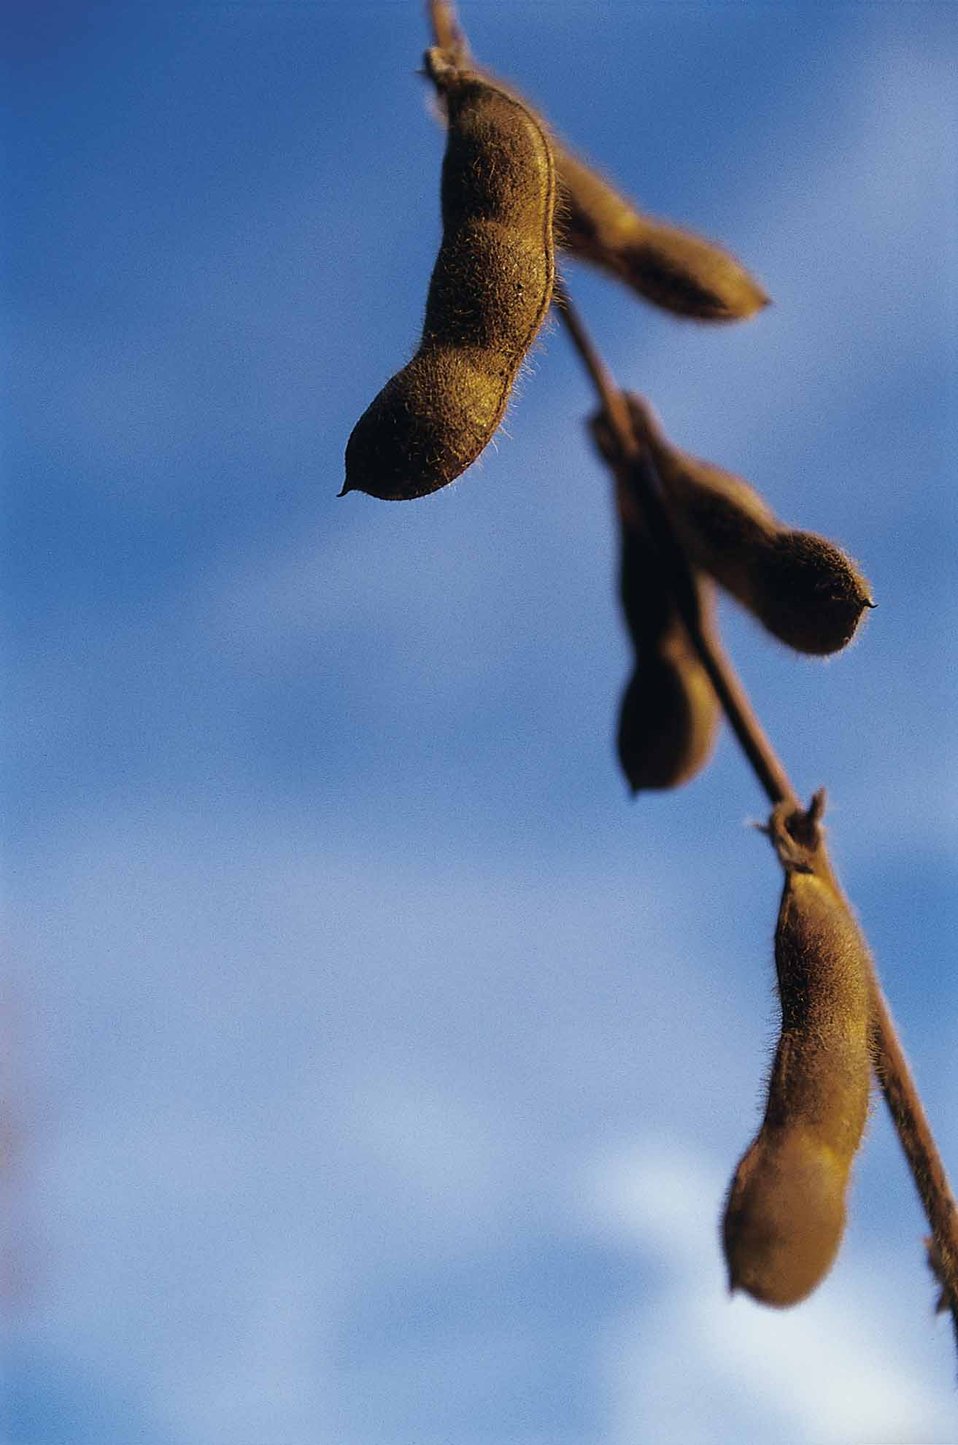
Soybeans in pods at harvest.